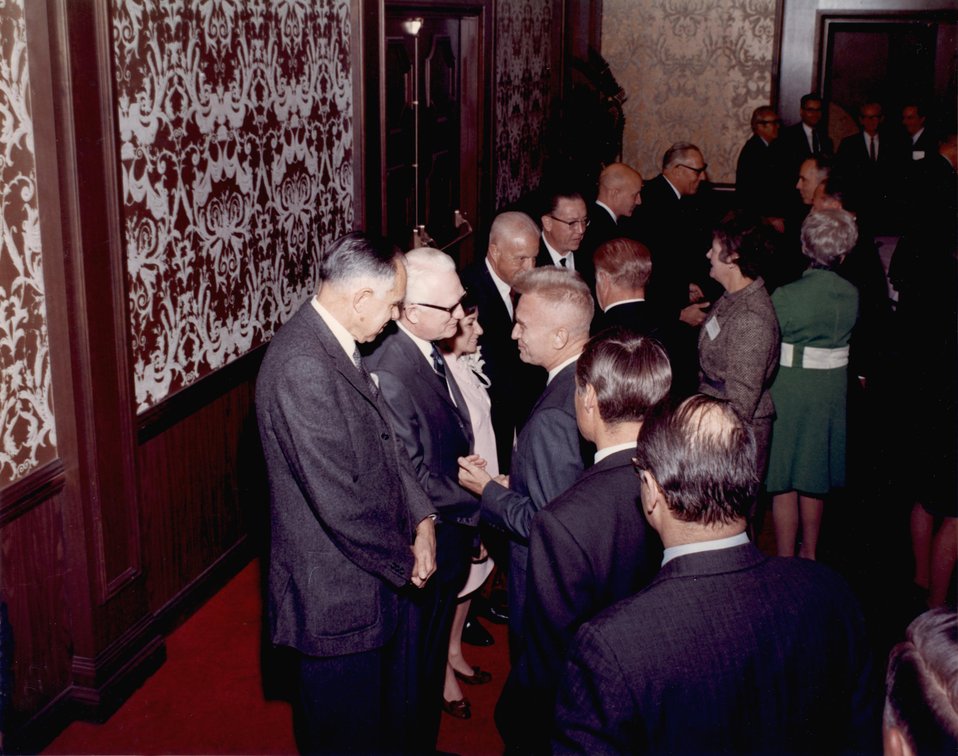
Enrico Fermi Award Ceremony. Imperial Ballroom. San Fransisco Hilton Hotel. 5:30 p.m., December 2, 1969. Fermi Award. Recipient: Walter Zinn. Date: Dec. 2, 1970.